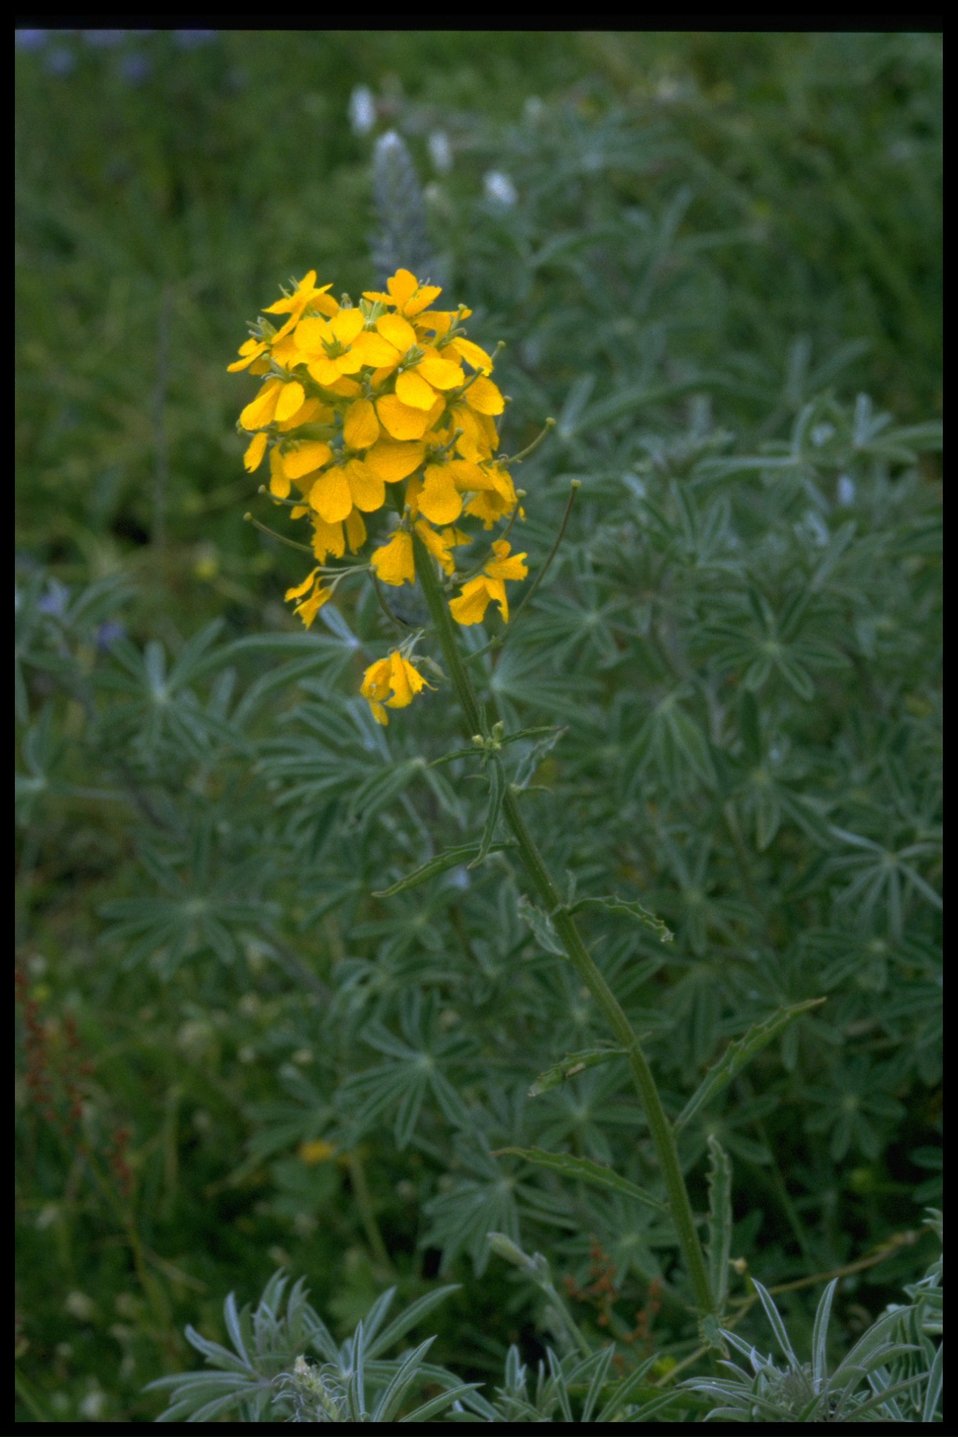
Medium shot of Erysimum cheiranthoides.